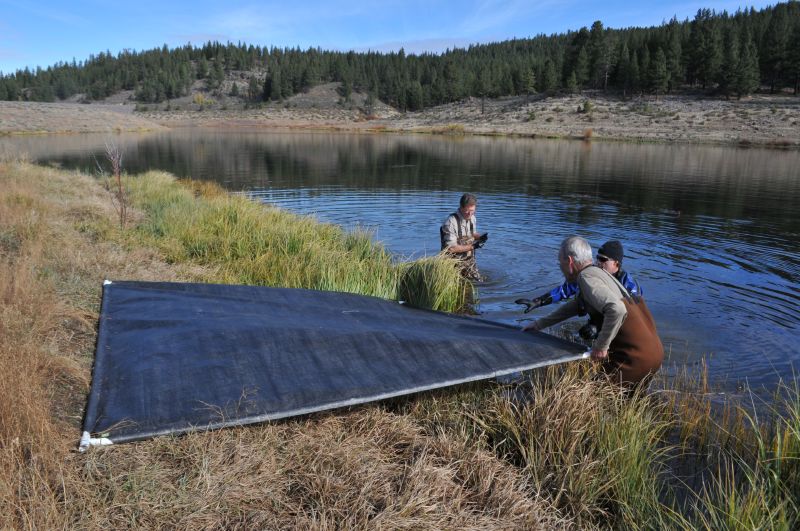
MARTIS CREEK LAKE, Calif. (Oct. 31, 2010) - Volunteers place sunlight barriers here Oct. 31 as part of a project to eradicate invasive Eurasian milfoil plants from the lake bottom. The gas-permeable barriers kill the milfoil plants by blocking sunlight, but don't disturb other plant and animal species native to the lake. The Corps is partnering with the Tahoe Divers Conservancy on the project, funded by a $20,000 grant from the Community Foundation of Western Nevada's Truckee River Fund.